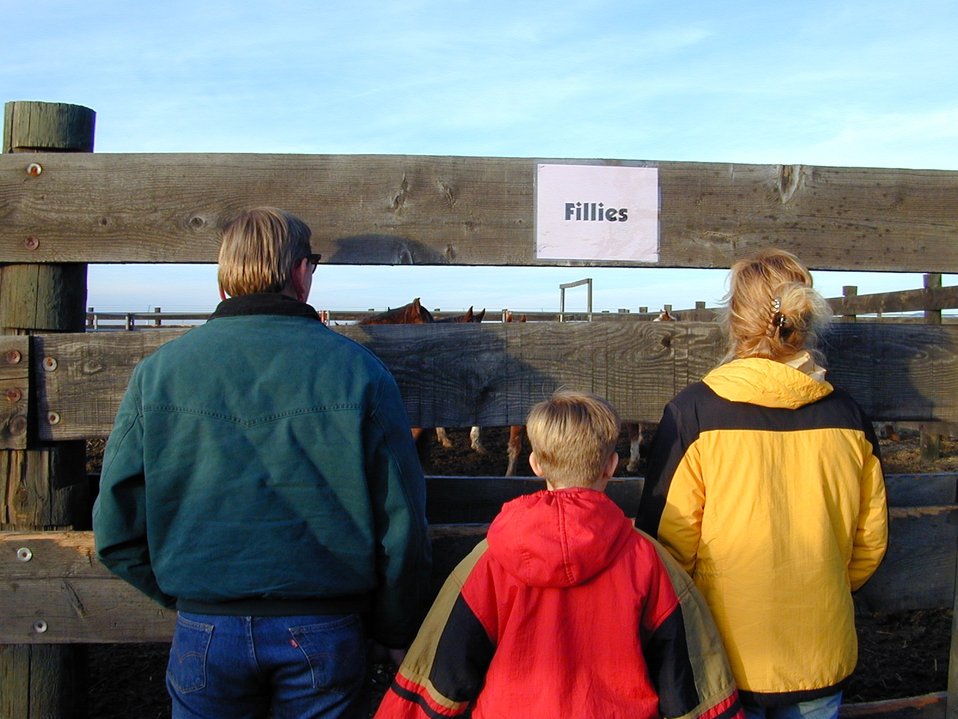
Wild Horse and Burro Adoption